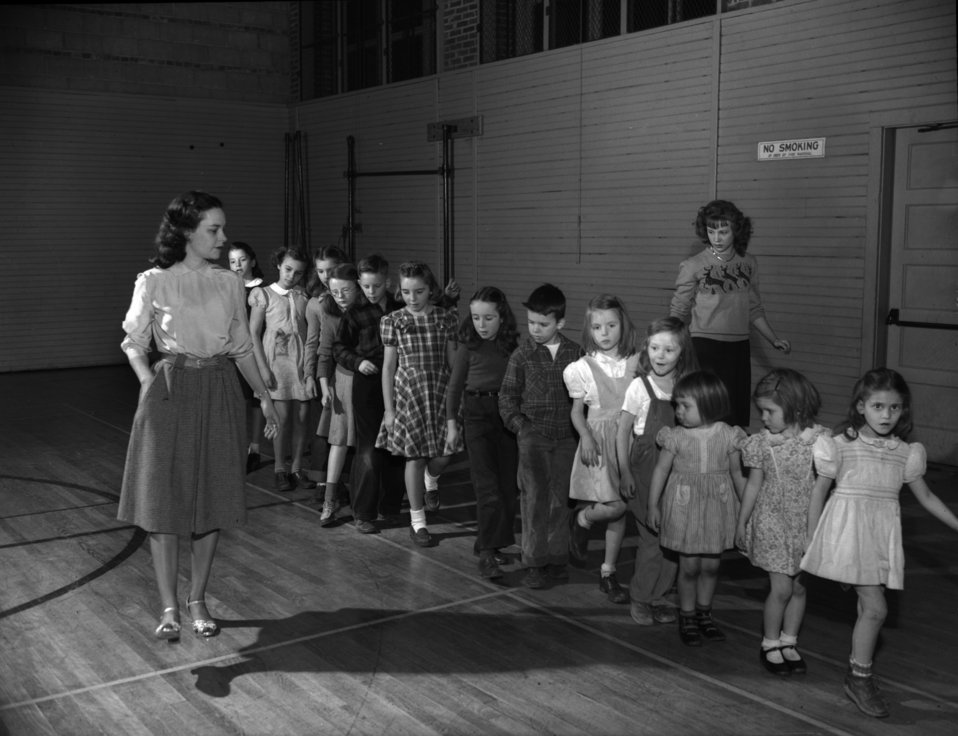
Tap Dancing, Elm Grove School

004255-2 photo by Ed Westcott
Oak Ridge Tennessee 1-19-1948